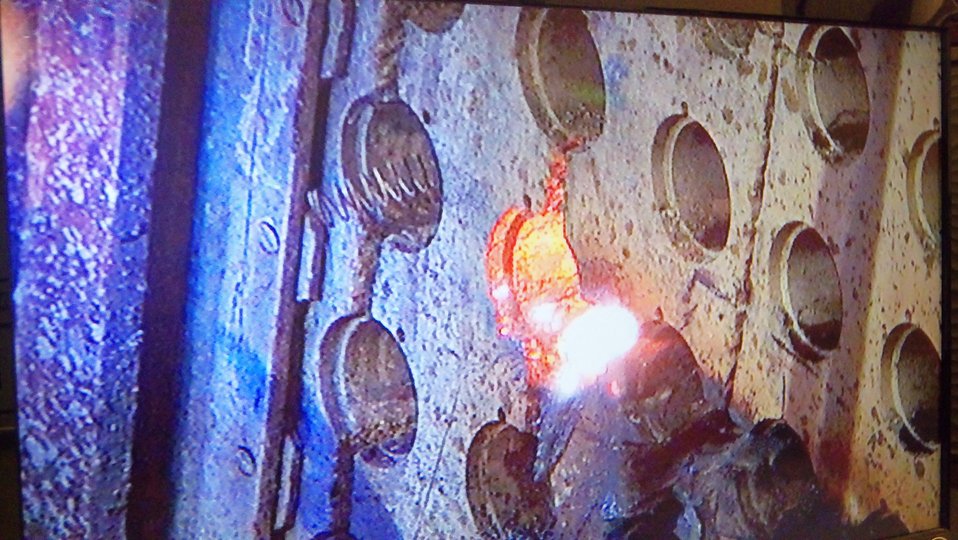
Brookhaven Lab Makes Strides in Reactor Decommissioning

A specially designed remote torch cuts through the bioshield.
***
American Recovery and Reinvestment Act workers at Brookhaven National Laboratory are busy dismantling a 4,760-ton bioshield made of concrete and steel that wrapped around the world’s first reactor built solely for peaceful research purposes.